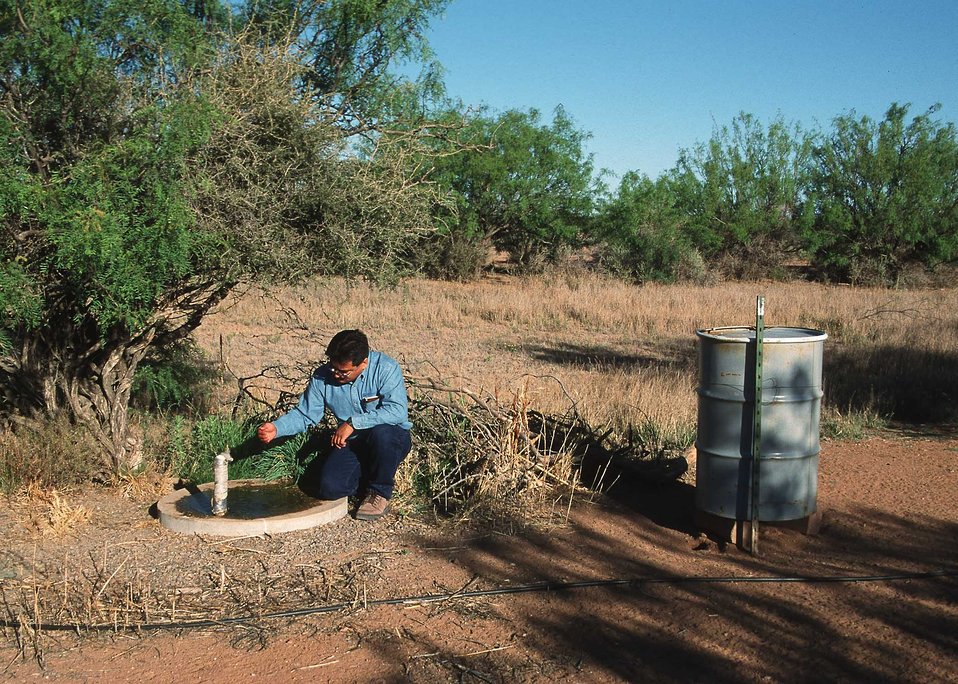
Range conservationist inspects a watering device in this southern New Mexico wildlife habitat area.